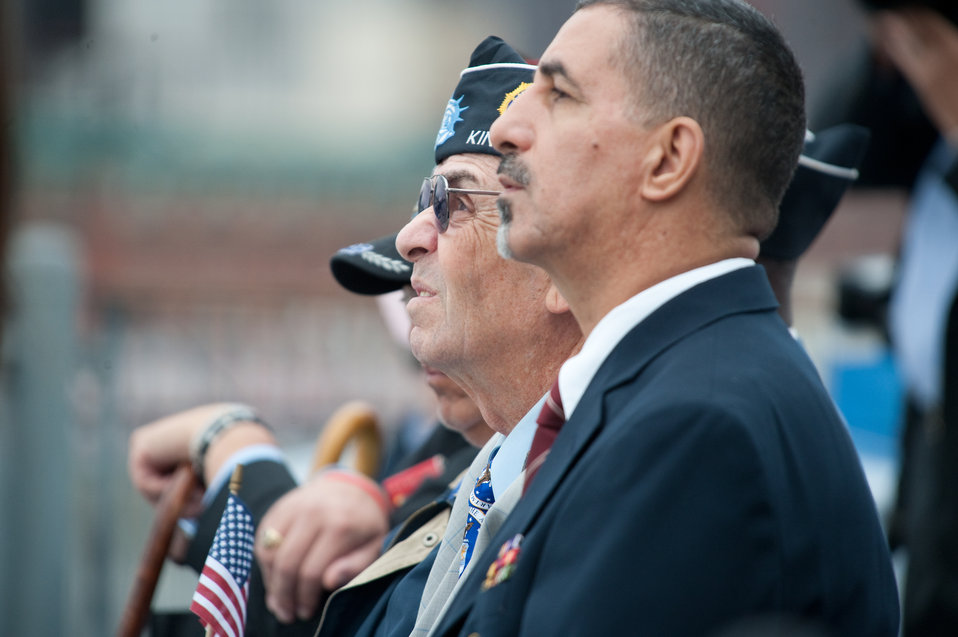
Air Force Week New York City Proclamation Ceremony

Mr. Irwin Beck (second from right) during the Air Force Week New York City proclamation ceremony at the USS Intrepid on Aug. 24, 2010. Mr. Beck was an Airman Third Class in during the Korean War. He joined the U.S. Air Force in 1952 at the age of 17. The event at the Intrepid Sea, Air & Space Museum was highlighted by a six-ship flyover by the USAF Thunderbirds. The Honorable Michael Donley, Secretary of the Air Force attended, along with General Raymond Johns, Commander of Air Mobility Command. The Police Commissioner of the City of New York, the Honorable Raymond Kelly, represented NYC. Mr. Greg Kelly of